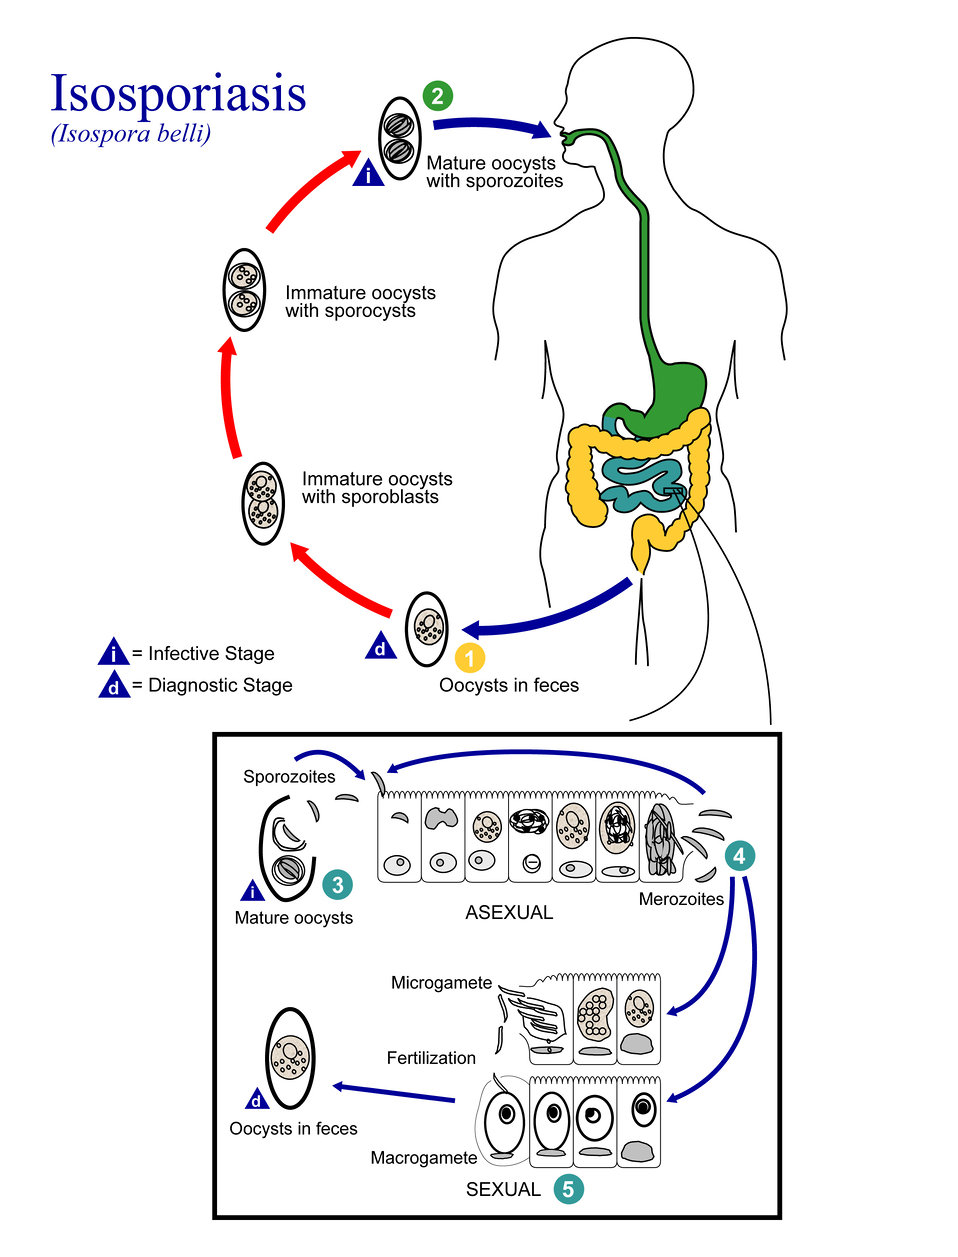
This is an illustration of the life cycle of Isospora belli, the causal agent of Isosporiasis.